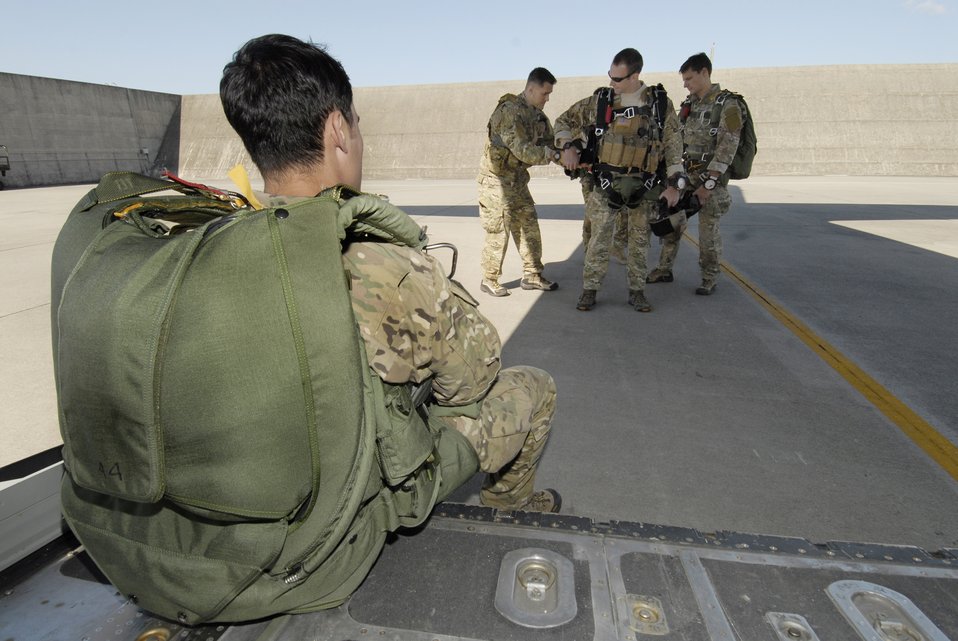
Kadena Airmen jump over le Shima Island

Pararescuemen assigned to Kadena Air Base, Japan, prepare for a high-altitude low-opening jump over Ie Shima Island, Japan, Dec. 23, 2009. The jump was part of routine training for the 320th Special Tactics Squadron and the 31st Rescue Squadron.